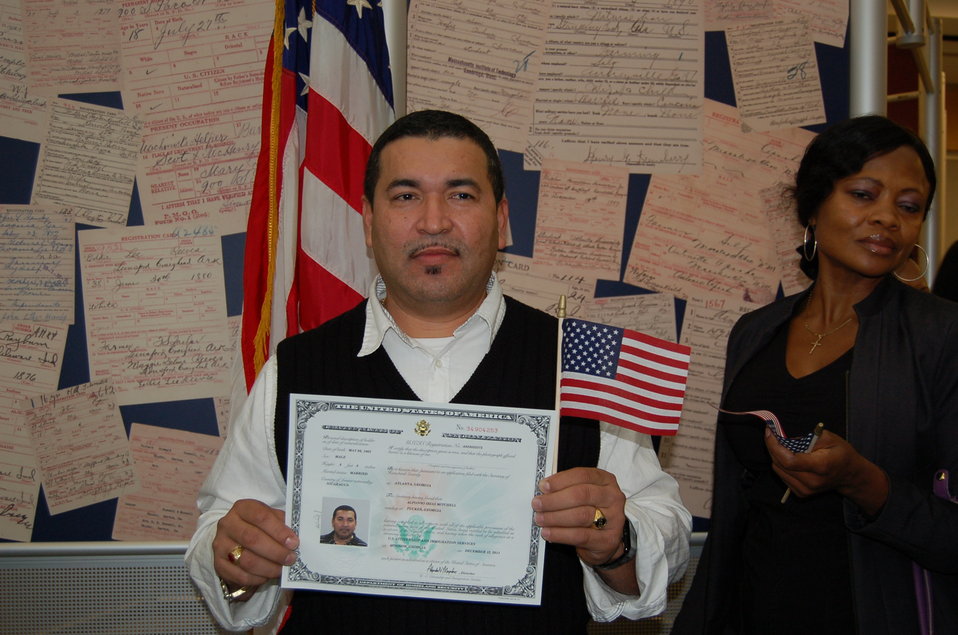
New Citizens